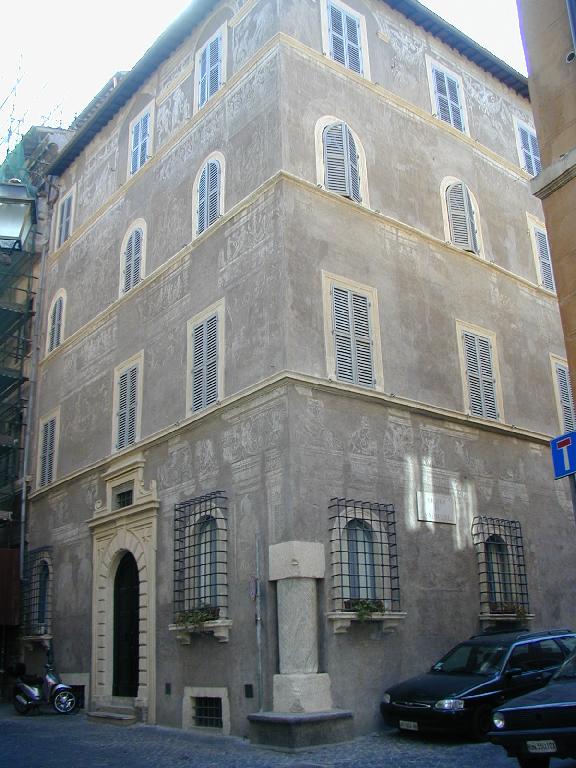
000815 5 p zzo lancellotti1